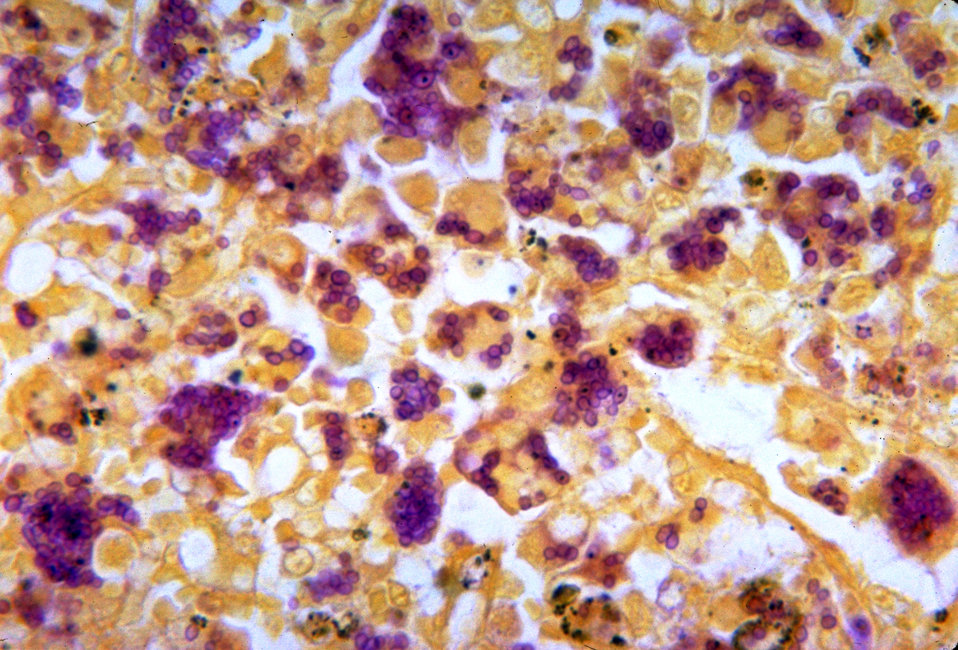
This micrograph depicts the histopathologic changes associated with histoplasmosis of the spleen using Gridley stain.